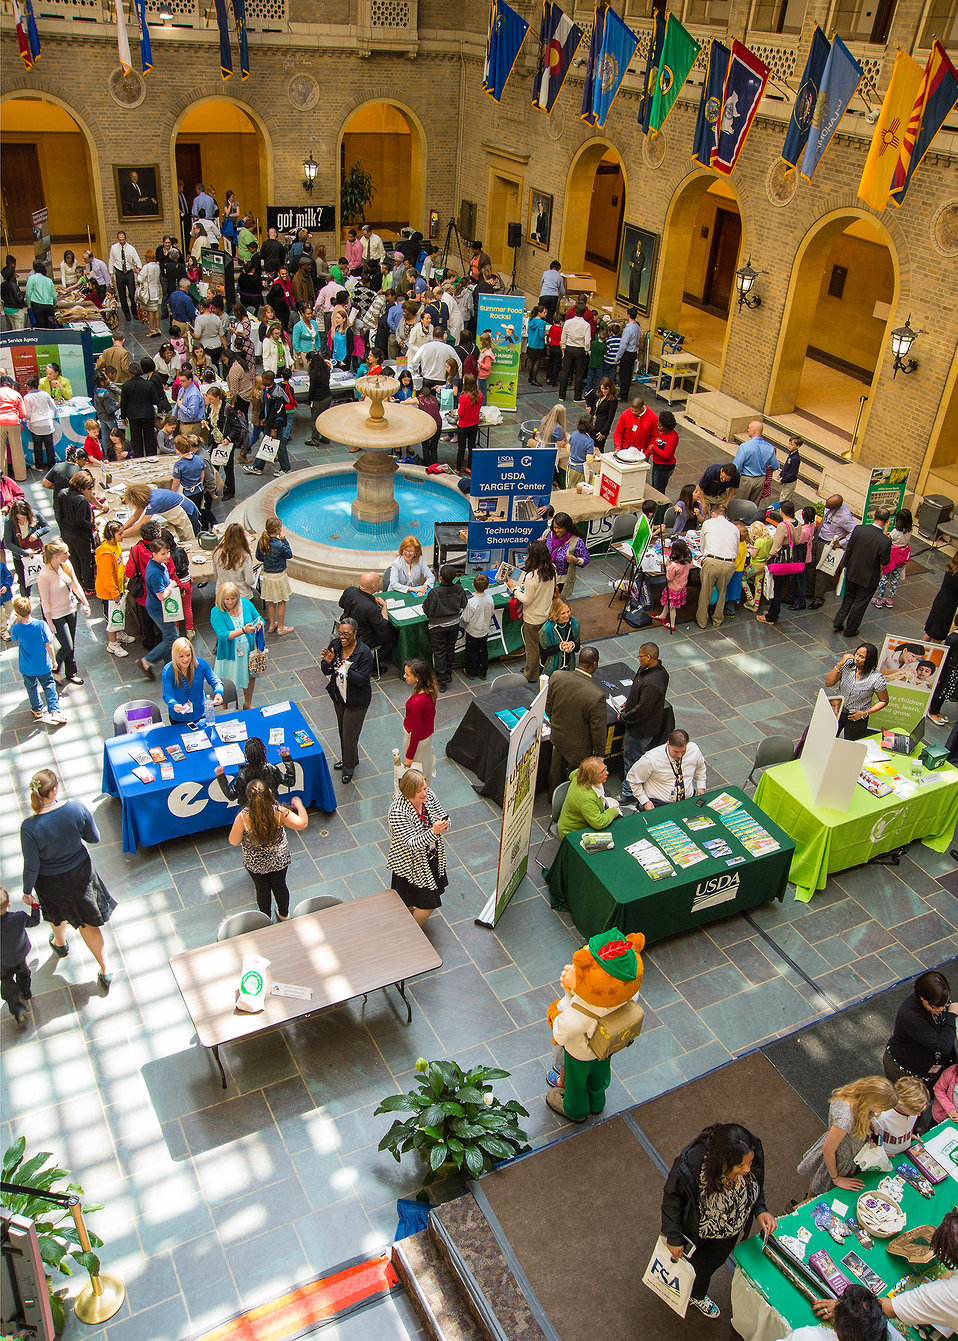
The U.S. Department of Agriculture (USDA) held its annual “Bring Your Daughters and Sons to Work on Thursday, Apr. 24, 2014 in Washington, D.C. The event offers employees the opportunity to bring their children to work to experience what they do in their profession and offer insight into other careers at the Department of Agriculture.